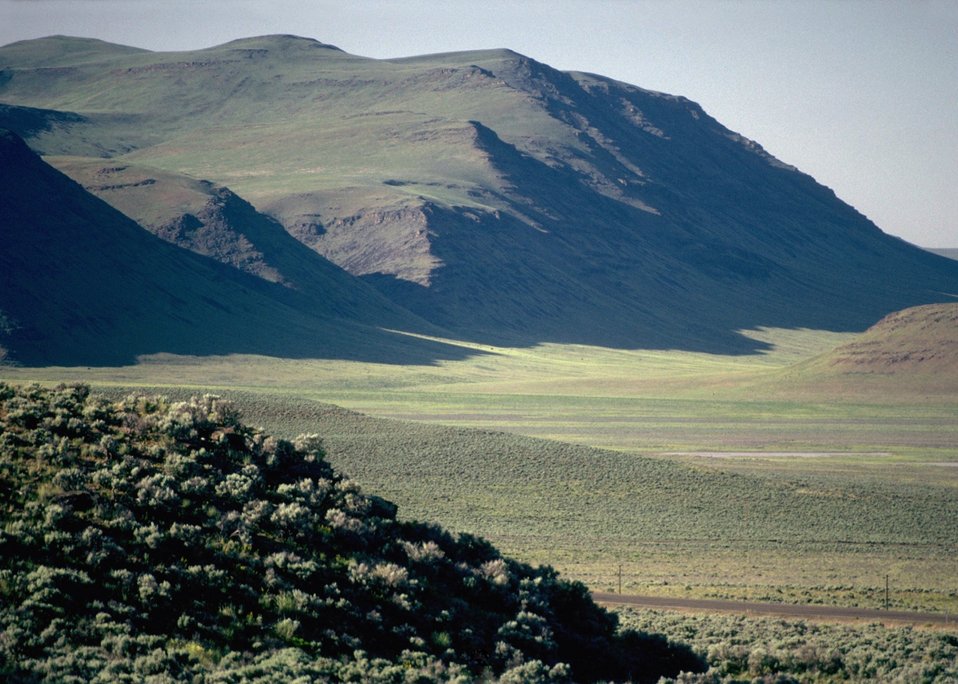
Morning Shadows from the Sheephead Mountains, Burns District, Oregon.